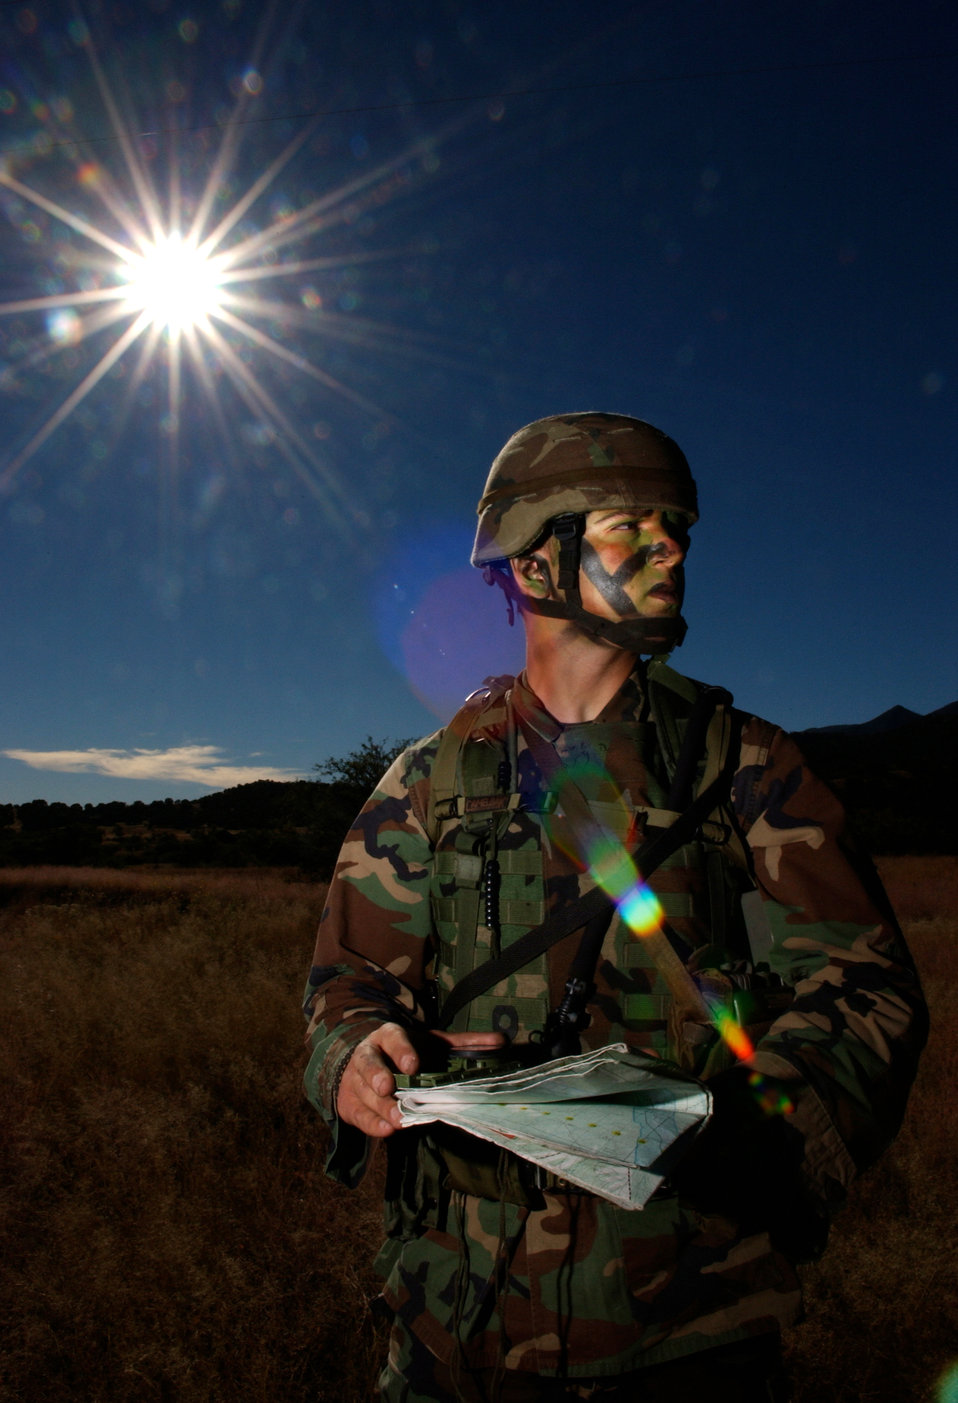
Follow me

FORT HUACHUCA, Ariz. -- Senior Airman Adam Dermish checks map coordinates prior to a tactics exercise here recently. Members of the U.S. Air Forces in Europe Defender Challenge team are preparing for the 2004 Defender Challenge competition. Airman Dermish is assigned to the 48th Security Forces Squadron, Royal Air Force Lakenheath, England.